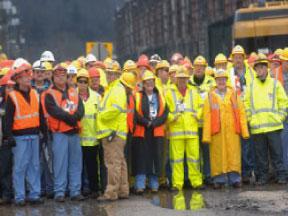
Oak Ridge craft workers

Craft workers on the K-25/27 Project Team are critical to safely demolishing the K-25 Building in Oak Ridge, TN.